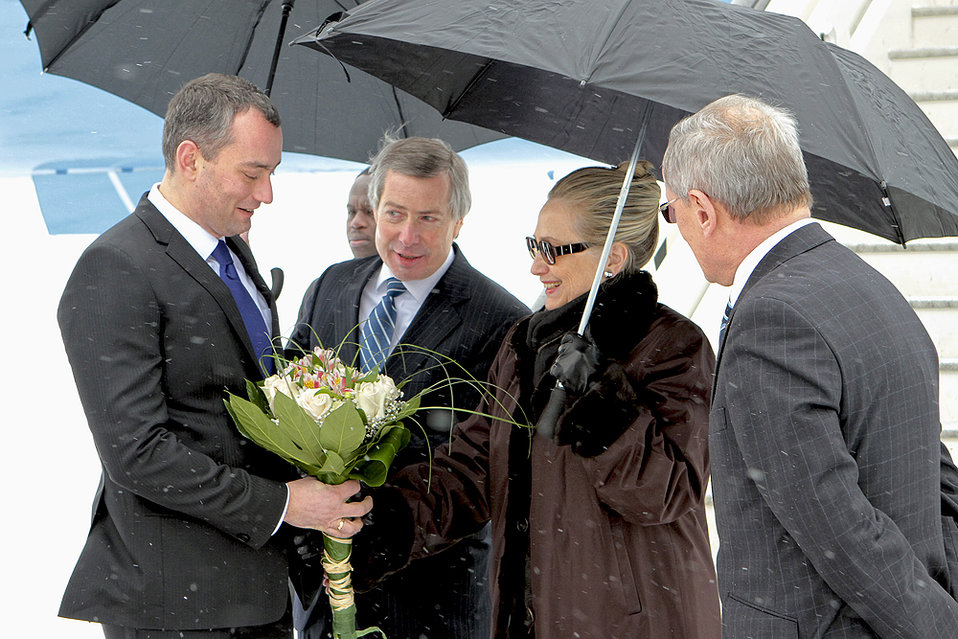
Secretary Clinton Is Welcomed to Bulgaria By Bulgarian Bulgarian Foreign Affairs Minister Mladenov and Ambassador Warlick

U.S. Secretary of State Hillary Rodham Clinton is welcomed by Bulgarian Foreign Affairs Minister Nikolay Mladenov, left; and U.S. Ambassador to Bulgaria James Warlick, second from left; to Sofia Airport in Sofia, Bulgaria, on February 5, 2012.